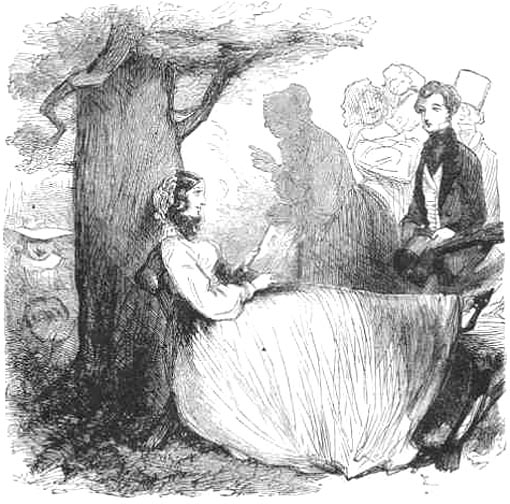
Pip's encounter with Mrs Pocket in the garden at Hammersmith, by John McLenan Français : Pip et Mrs Pocket dans le jardin à Hammersmith, par John McLenan.